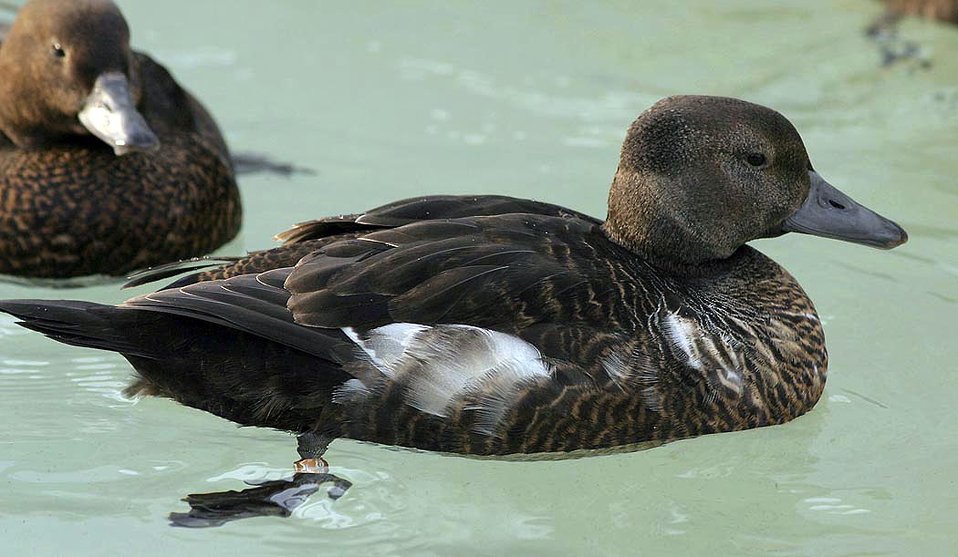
Threatened Steller's eider (Polysticta stelleri) female, Alaska SeaLife Center, Seward, Alaska